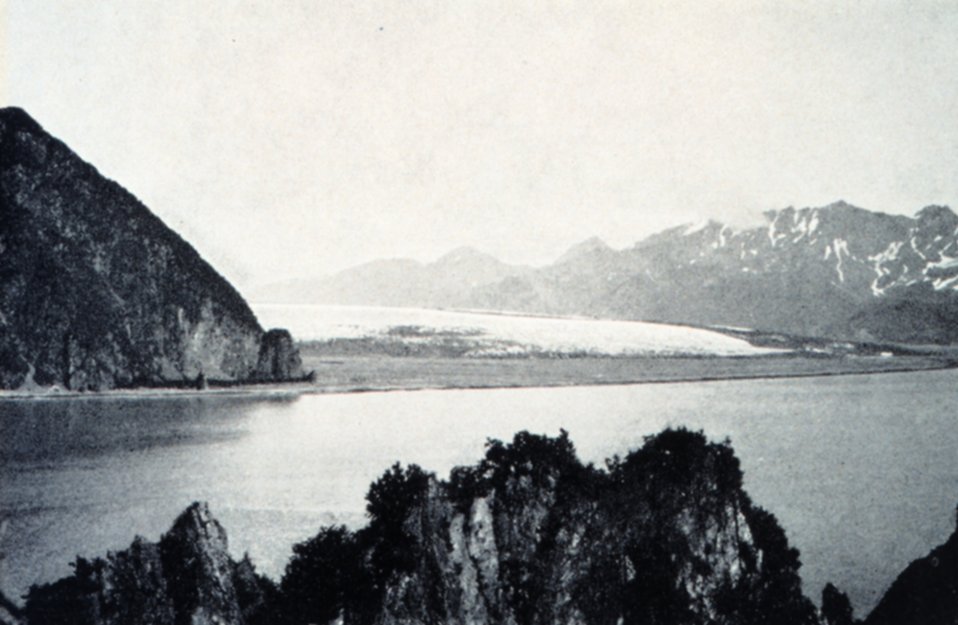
Harding Glacier in Resurrection Bay to the west of Seward Bay